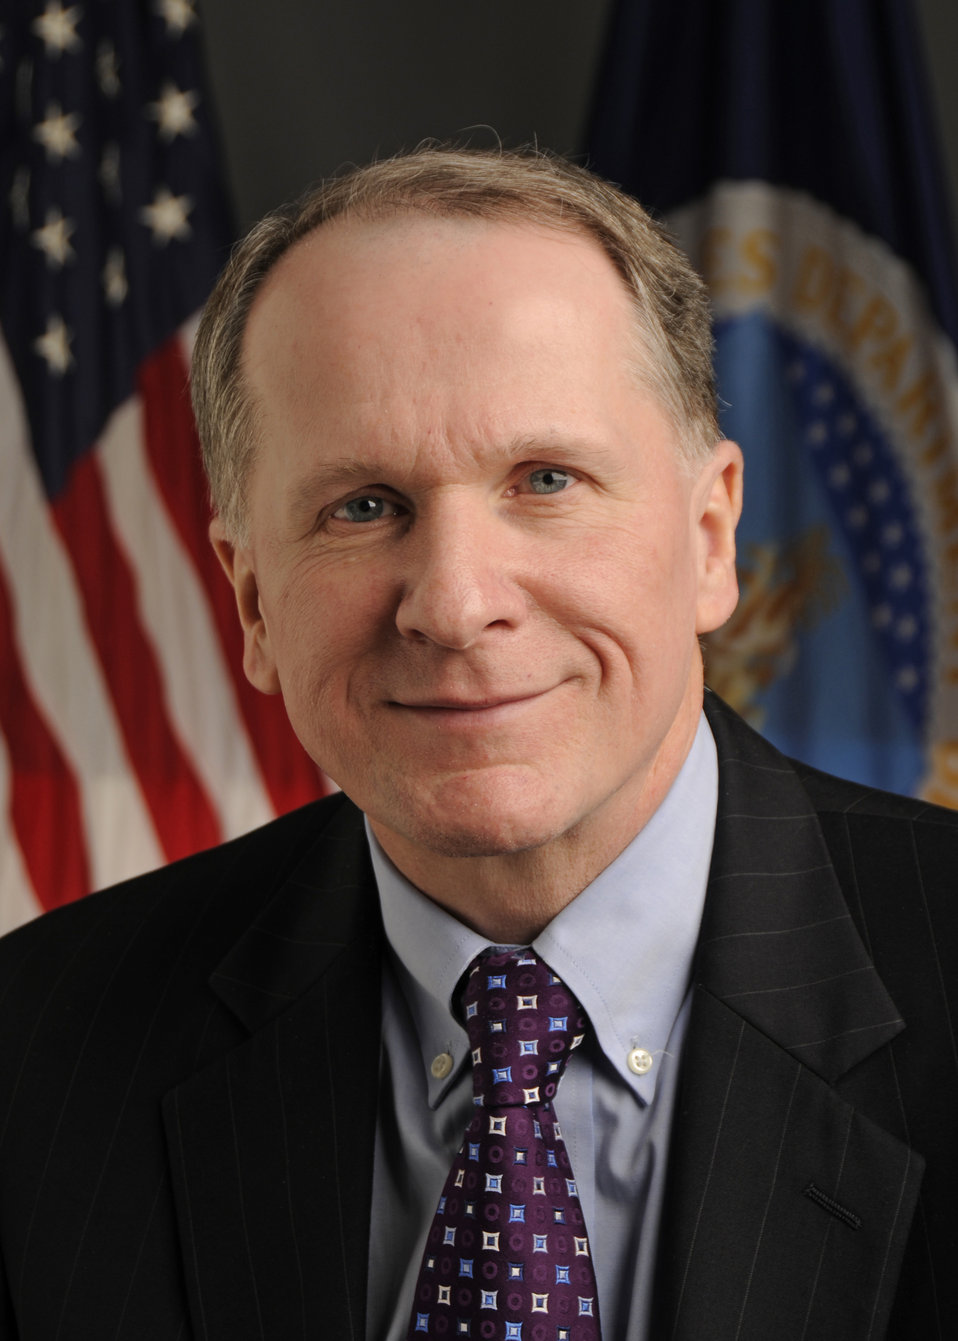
09di1018-02 Acting Administrator Animal Plant and Health Inspection Service Kevin Shea

Portrait Acting Administrator Animal and Plant Health Inspection Service (APHIS) Kevin Shea.